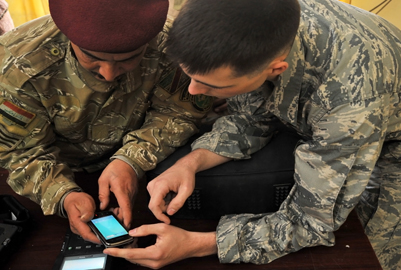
DOMEX

Airman 1st Class Luke Howell shows Iraqi soldiers how to use a CelleBrite machine to gather intelligence from a phone Jan. 5, 2011, on Joint Security Station Constitution, Iraq. Airman Howell is a documentation and media exploitation analyst at Camp Liberty, Iraq. The DOMEX mission is to gather actionable intelligence from documents, electronic devices and other materials collected on the battlefield.